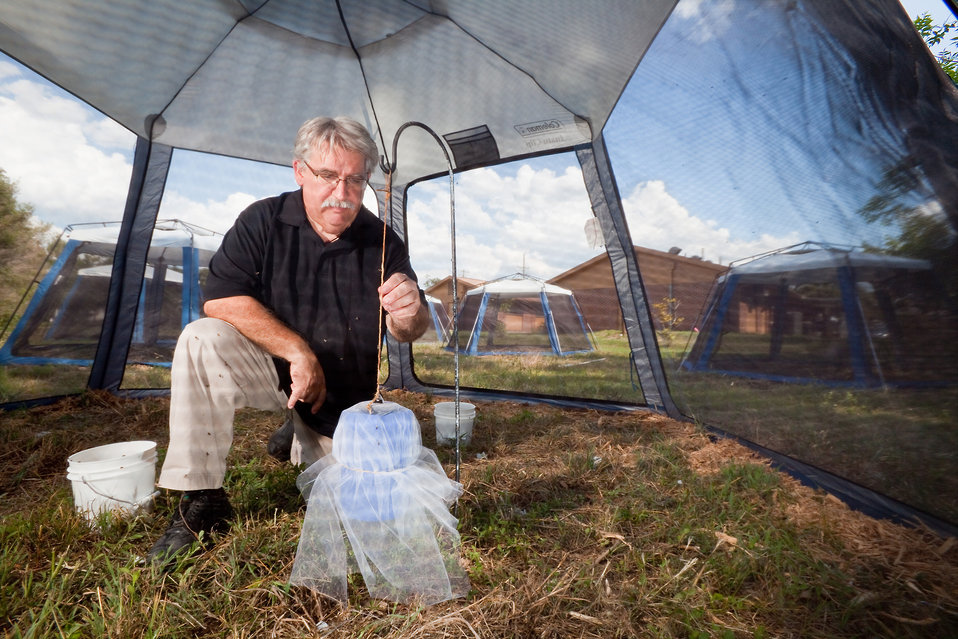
U.S. Department of Agriculture (USDA) Agriculture Research Service (ARS) entomologist Chris Geden sets up an autodissemination device for flies in an outdoor screen house at Gainesville, FL on May 23, 2012. Flies are attracted to the device by an olfactory lure and become covered with pesticide dust, which they carry back to larval development sites.